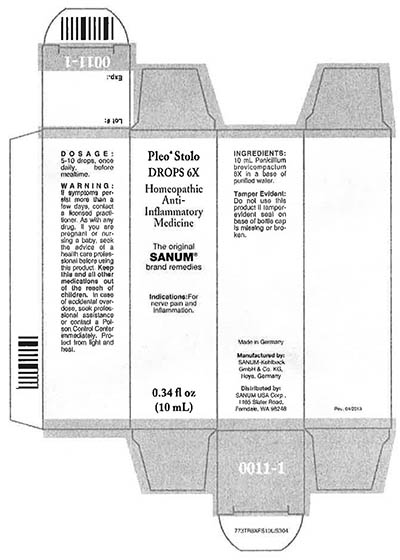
RECALLED – Homeopathic Drug Products

March 18, 2014 – Product Recall – Terra-Medica Issues Voluntary Nationwide Recall of Specified Lots of Pleo Homeopathic Drug Products Due to the Potential for Undeclared Penicillin.